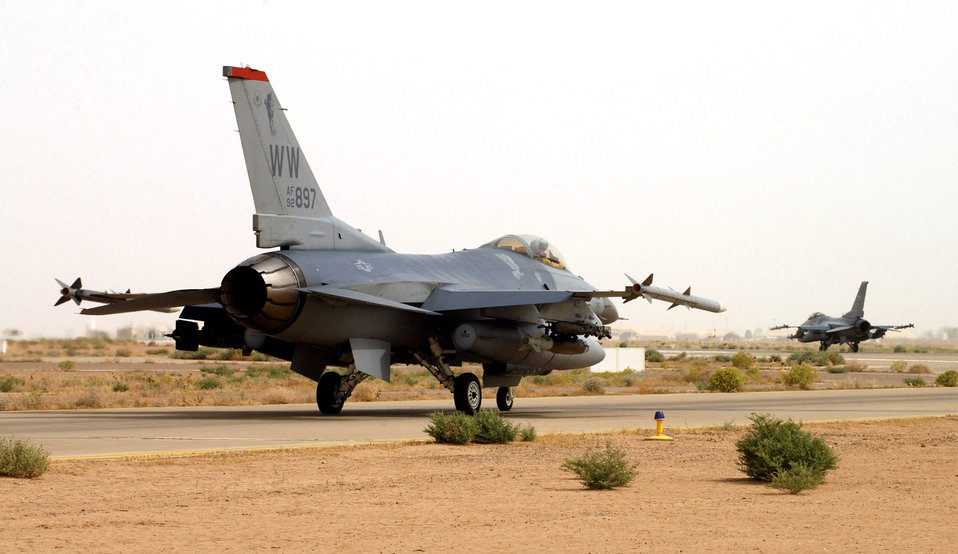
Misawa squadrons swap out Iraqi mission

Two F-16 Fighting Falcons taxi on the flightline for a combat mission May 30 from Balad Air Base, Iraq. More than 260 Airmen from the 13th Expeditionary Fighter Squadron and 35th Aircraft Maintenance Squadron from Misawa Air Base, Japan, took over the close-air-support mission from their sister squadron, the 14th EFS.